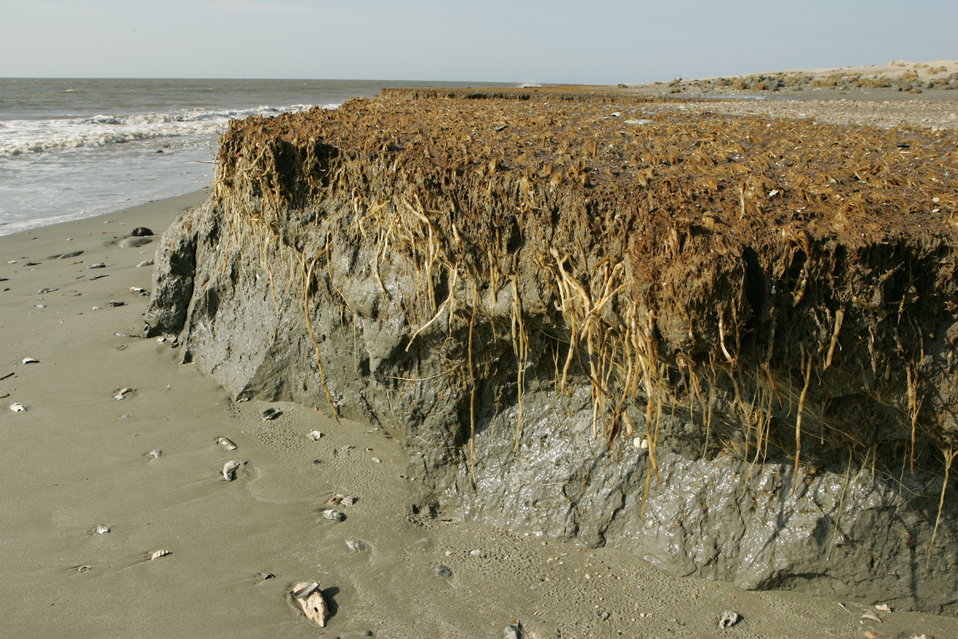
Beach erosion

Rising ocean levels cause erosion problems for the refuge